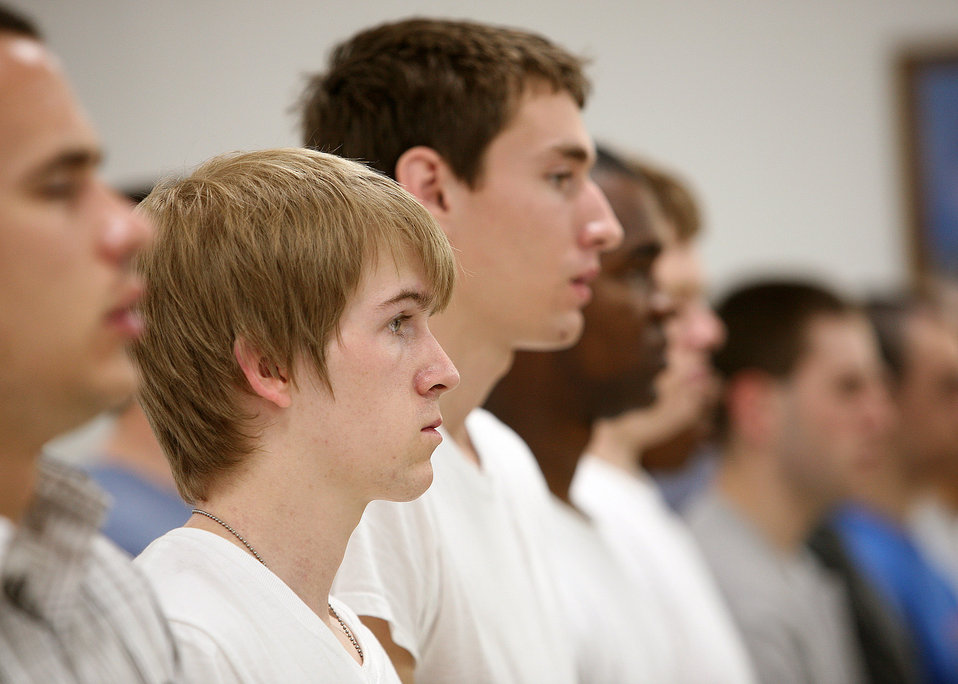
First steps of future Airmen

Air Force basic trainees wait their turn for a haircut May 2 at the clipper cuts at Lackland Air Force Base, Texas. These trainees are assigned to the 323rd Training Squadron's Flight 393. They are scheduled to graduate June 15.